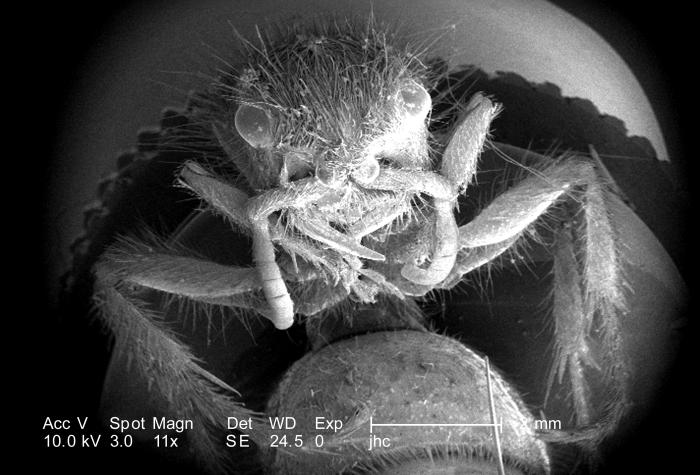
Under a very low magnification of only 11X, this scanning electron micrograph (SEM) revealed the morphologic details of a female velvet ant's, Dasymutilla sp., distal abdomen from which her stinger had been exposed. Another view of the exposed stinger can be seen in PHIL 9894. The female velvet ant is not really an ant at all, but a wasp, which merely resembles an ant, hence its name. Its sting is very painful, which has caused it to often be referred to as the 'cow killer' ant. However, it was the post-sting festering wound, which would become infested with the now eradicated screw fly that would cause the cow's death, and not the sting. Also see PHIL 4638, 6363, and 6364 for photographs of the ant revealing its coloration, and velvety covering of external chitinous hairs.